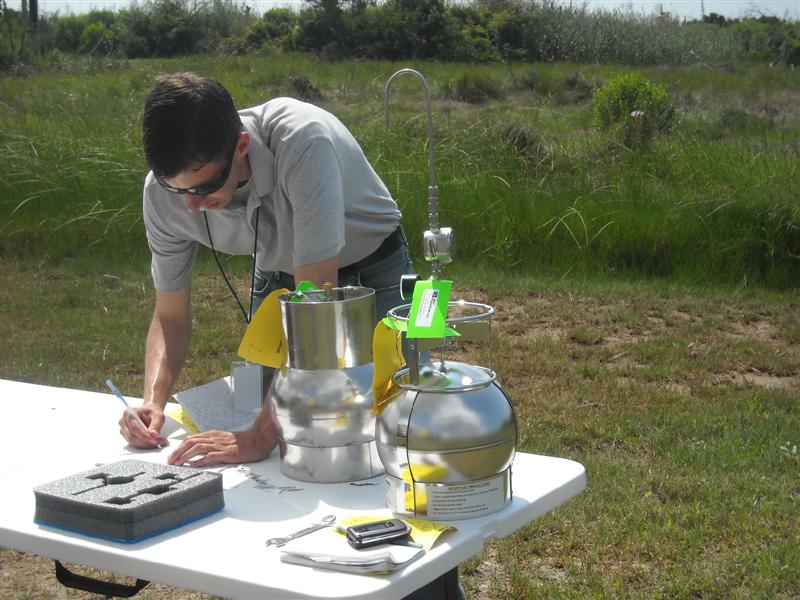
Air Monitoring Along the Gulf Coast

Air monitoring for oil related compounds